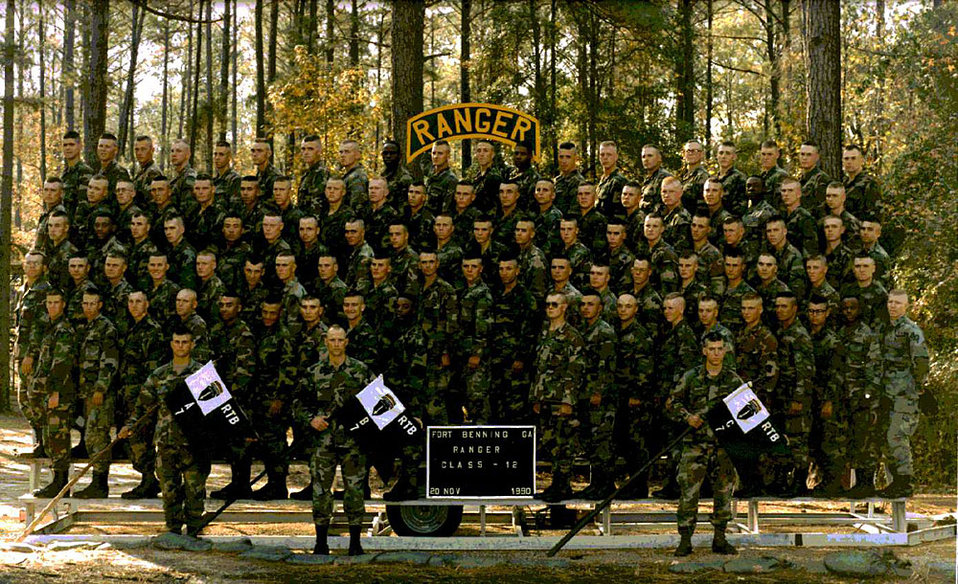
Kurt Waterstradt, a State Coordinator for the Partners for Fish and Wildlife Program, has an extensive military career. He was commissioned as a Regular Army Second Lieutenant with the 5th Infantry Division and served three years active duty. Waterstradt is currently part of a U.S. Army Reserve assignment as Logistics Officer for Alaskan Command, Elmendorf AFB, and Anchorage. Waterstradt will be retiring in January 2013 with 22 1/2 years of military service. He is a graduate of U.S. Army Ranger School in 1990. Waterstradt is in the second row from the top, seventh in from the left.